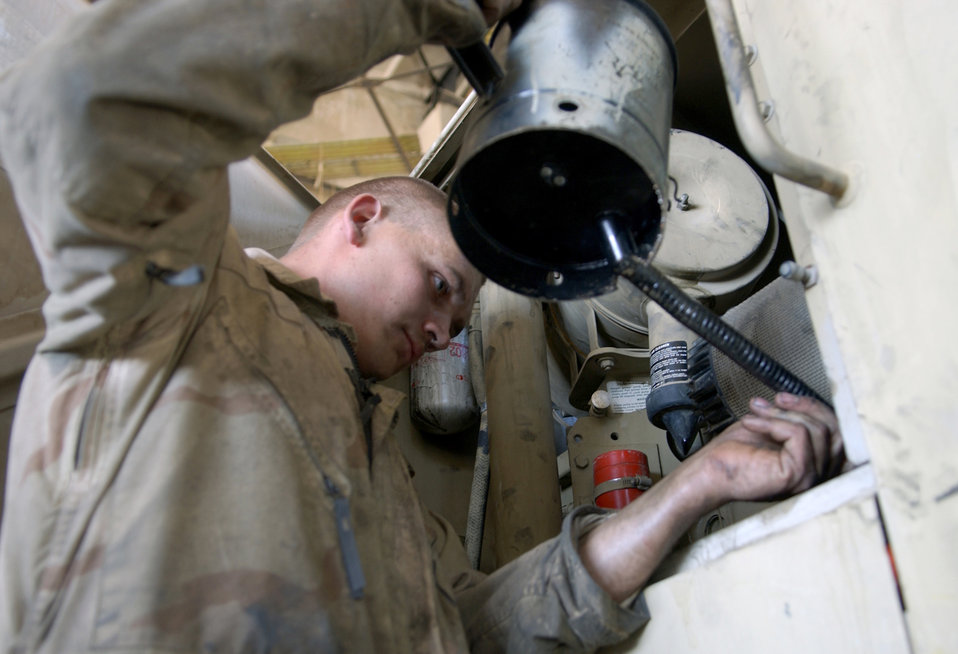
Time for an oil change

BAGRAM AIR BASE, Afghanistan -- Staff Sgt. Christopher Logan tops off oil in a forklift here after he replaced its engine. He is assigned to the 455th Expeditionary Logistics Readiness Squadron and is deployed from Davis-Monthan Air Force Base, Ariz.